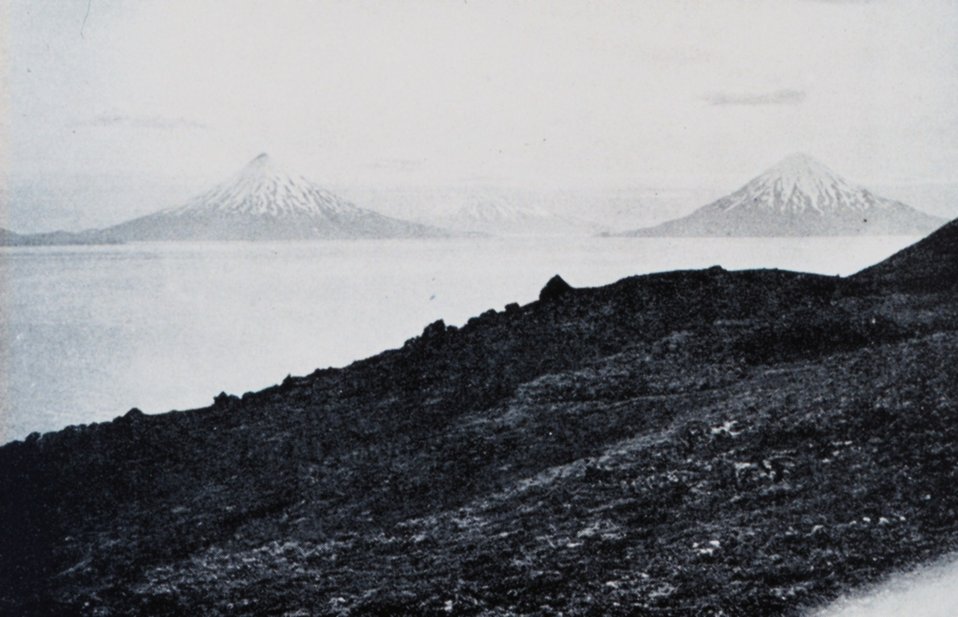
Looking SW from Uliaga in the Four Mountain Islands.